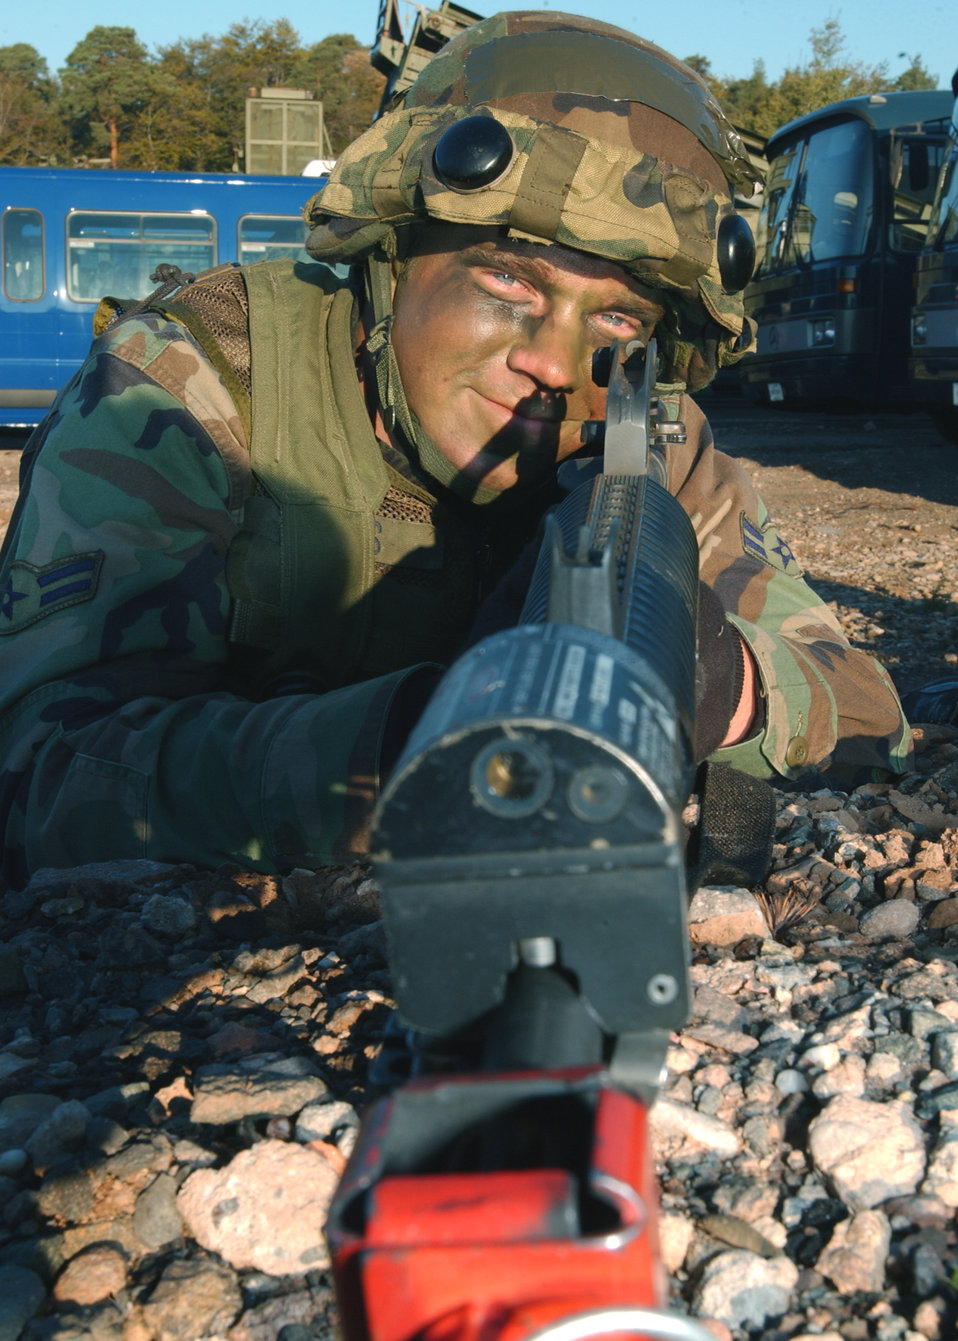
In My Sights

RAMSTEIN AIR BASE, Germany -- A Security Forces member smiles for the camera in his camoflauge paint during exercise Silver Flag on Oct. 15. The purpose of exercise Silver Flag is to train a security forces team on essential knowledge and tasks to efficiently deploy and establish force protection at a bare-base site.